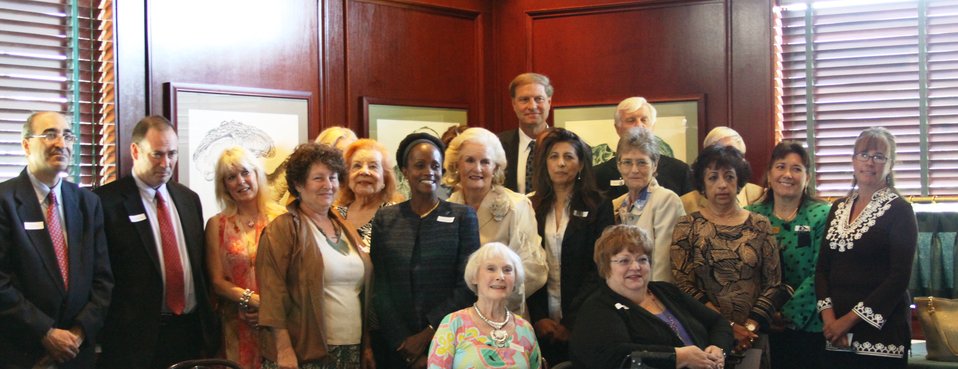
Assistant Secretary Brimmer Poses for a Photo With Academics and Community Leaders

Assistant Secretary for International Organization Affairs Esther Brimmer poses for a photo with a group of Las Vegas academics, business, and other community leaders at a lunch meeting hosted by the World Affairs Council of Las Vegas in Las Vegas, Nevada, on September 1, 2011.